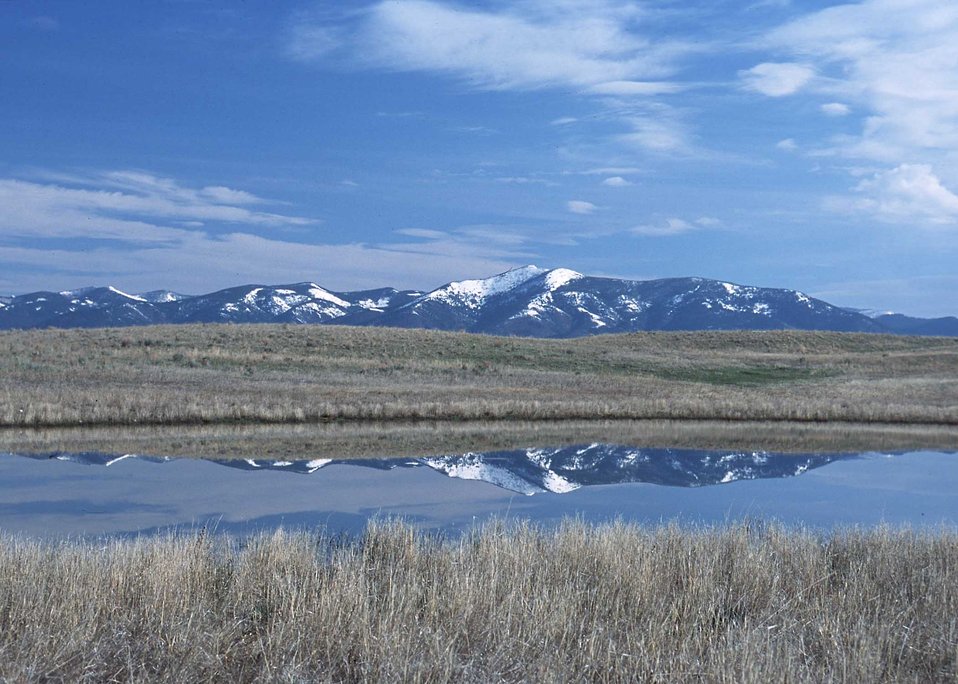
Source of livestock water on rangelands in northcentral Montana.